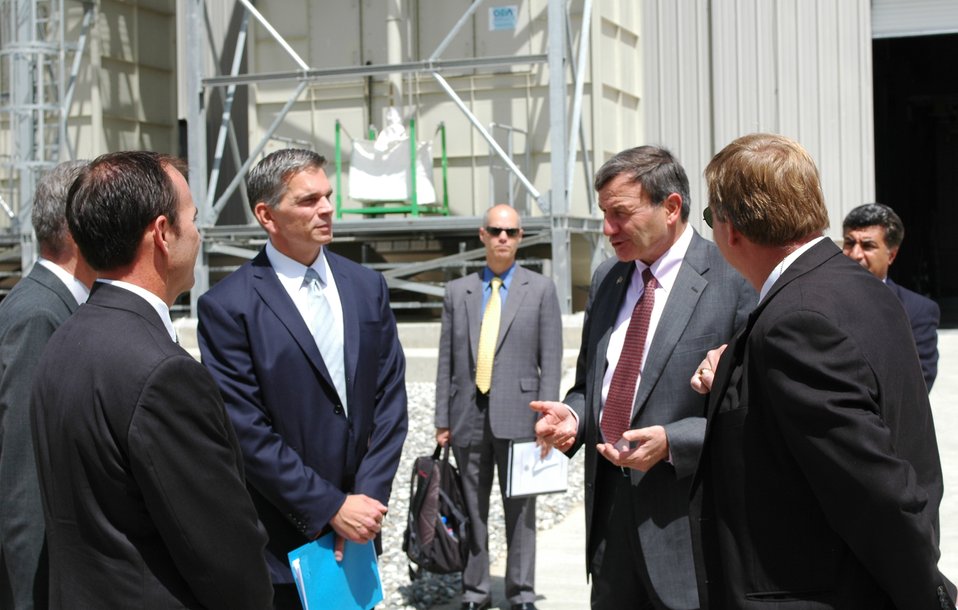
105 MW Tarakhil Power Plant Handover